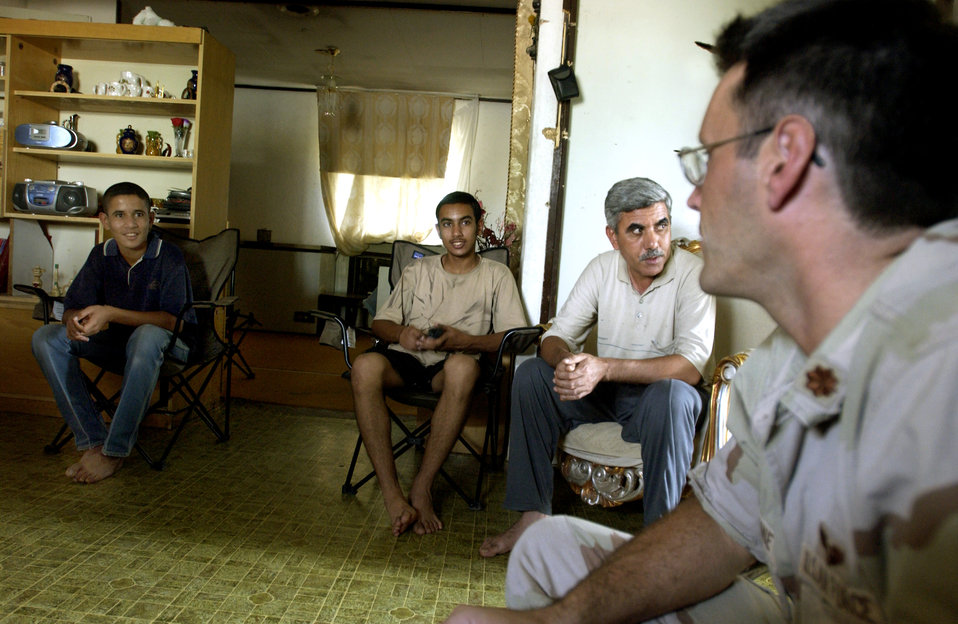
Medical visit

FRENCH VILLAGE, Iraq -- Maj. (Dr.) Gene Delaune gets a rare chance to visit in the home of an Iraqi family. He was invited to have tea after treating villagers on the opening day of a not-for-profit clinic established here Oct. 18. Delaune is an individual mobilization augmentee deployed from the 89th Medical Group at Andrews Air Force Base, Md.